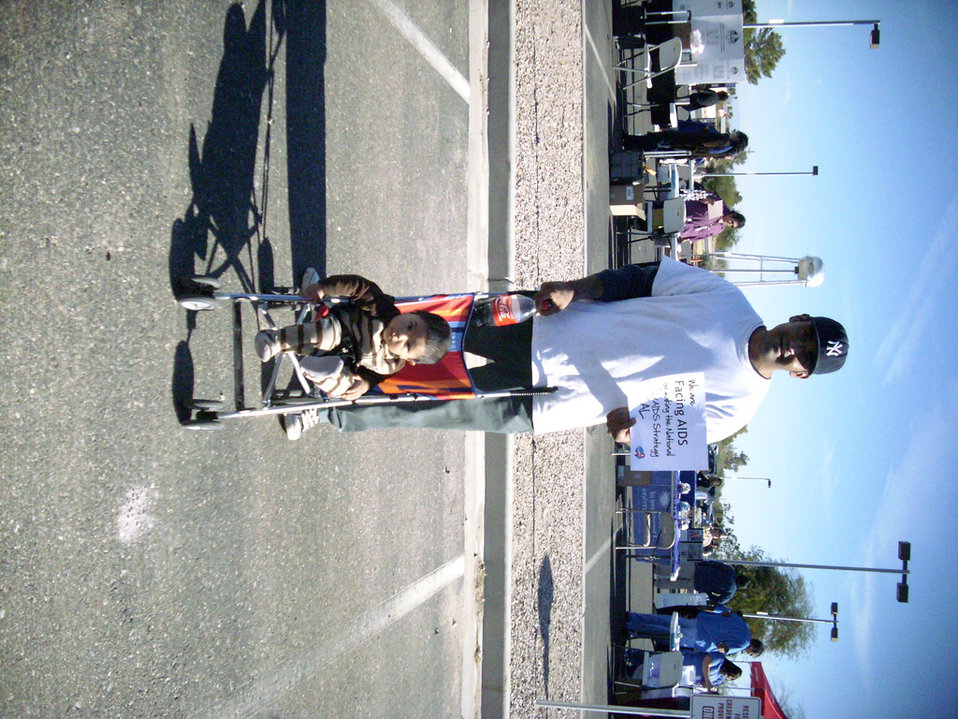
We are Facing AIDS through NHAS-17